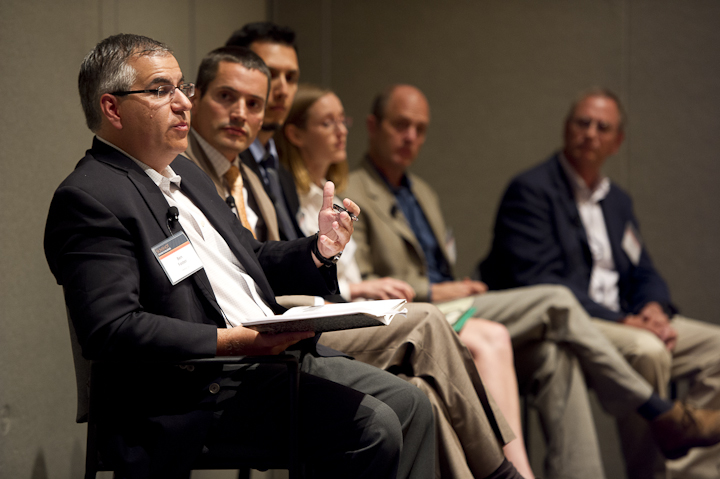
SunShot Break Out Session

June 13, 2012- Panelists speak at the Soft Costs break out session at the Technology Forum at the SunShot Grand Challenge Summit and Technology Forum in Denver, Colorado.